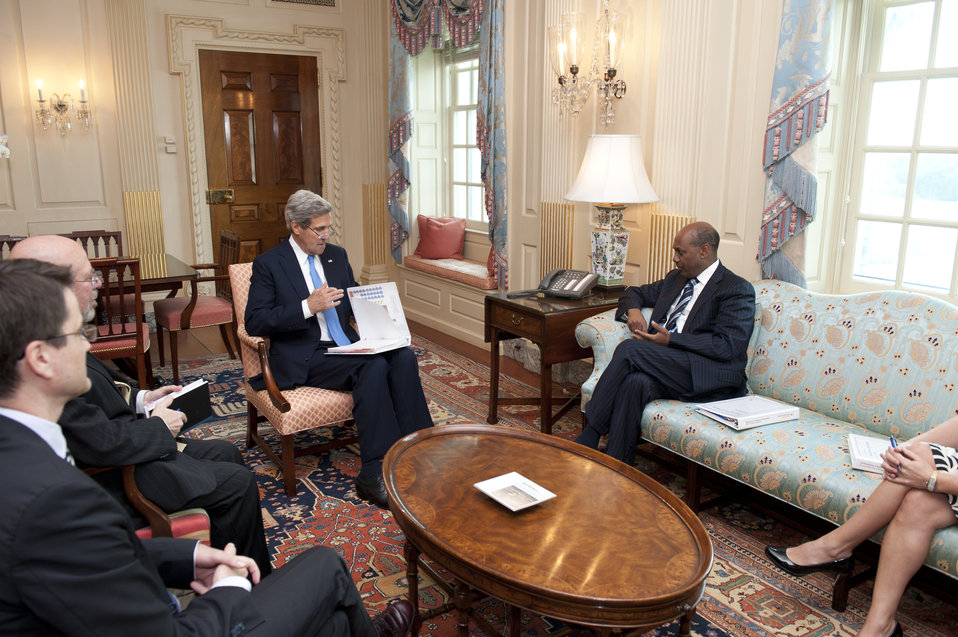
Secretary Kerry Meets With MCC CEO Yohannes

U.S. Secretary of State John Kerry meets with Daniel Yohannes, CEO of the Millennium Challenge Corporation, at the U.S. Department of State in Washington, D.C., on June 19, 2013.